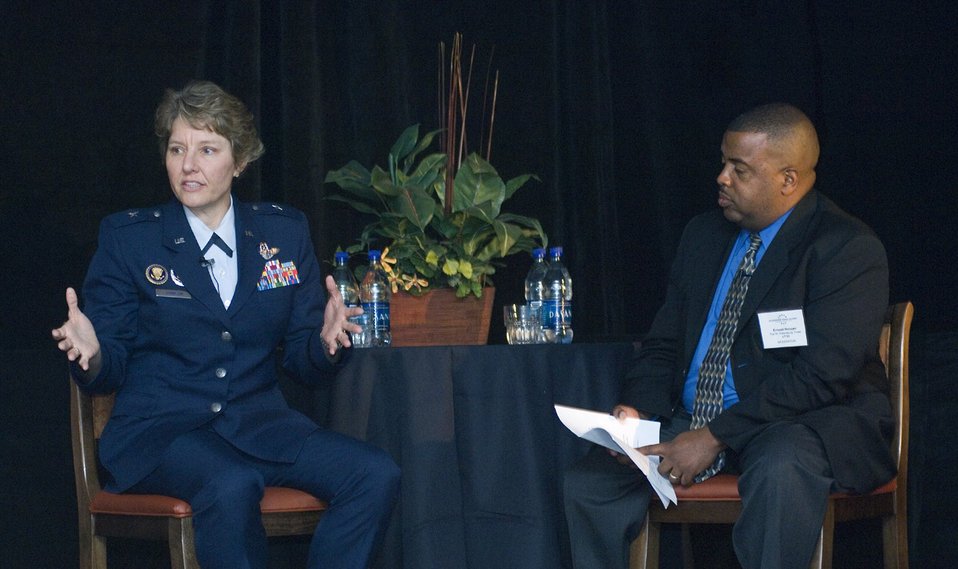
General speaks about mentorship at Women's Final Four

Brig. Gen. Michelle Johnson speaks during